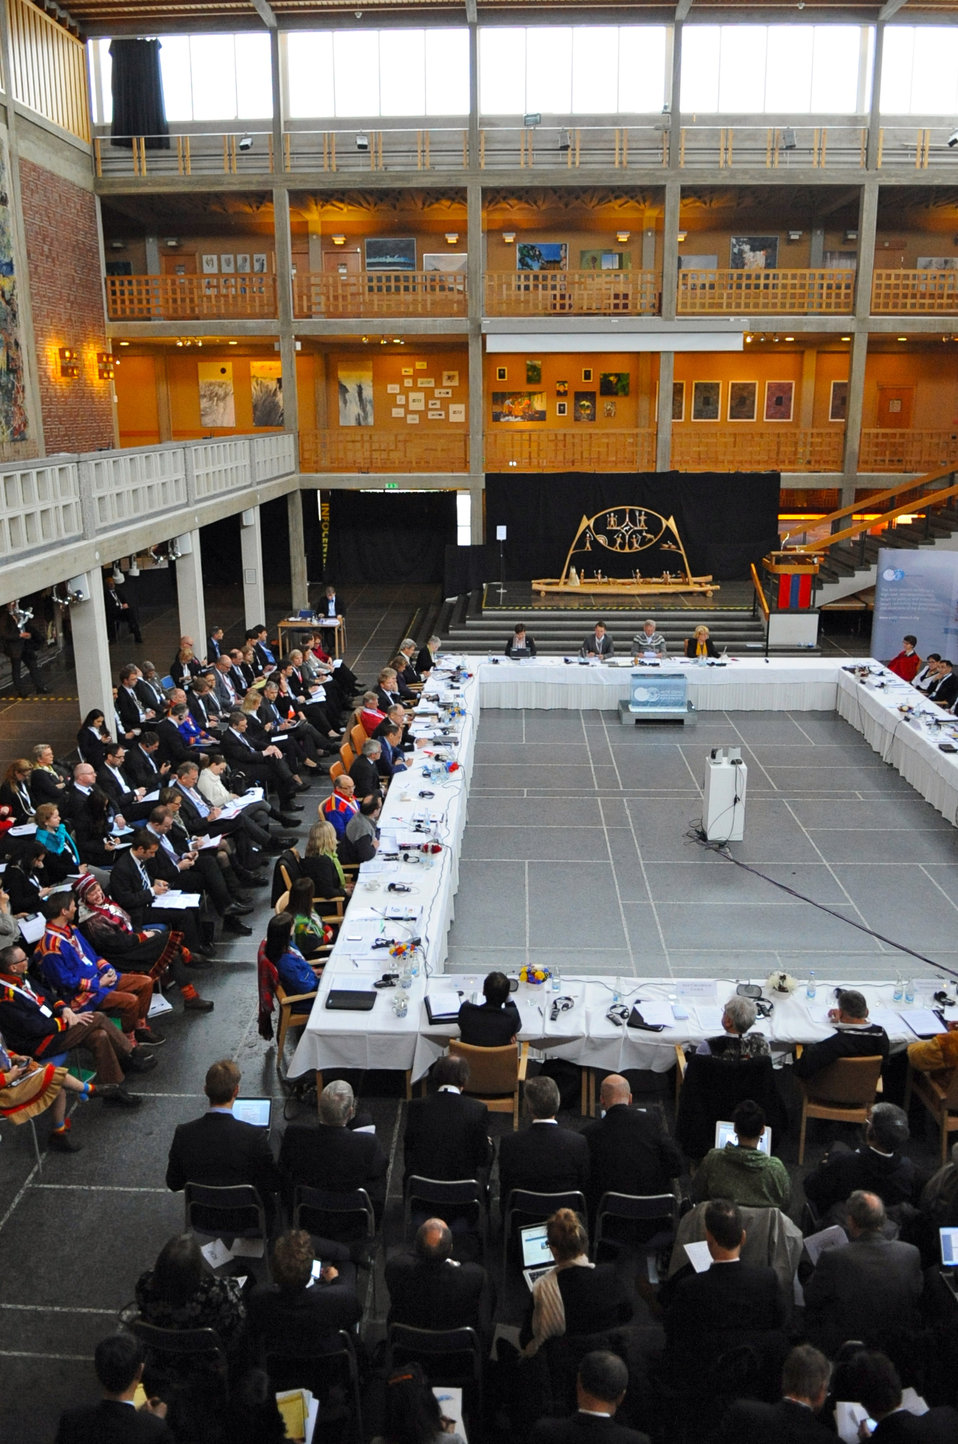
An overview of the Kiruna Ministerial Meeting of the eighth annual Arctic Council meeting at the City Hall in Kiruna, Sweden on May 15, 2013.